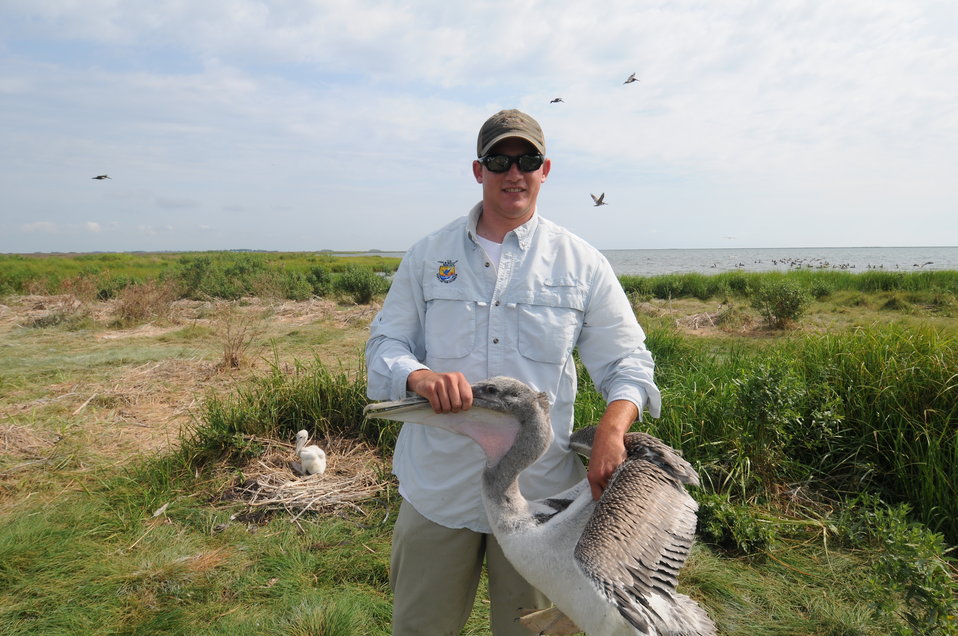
Biologist Robbie Callahan holds brown pelican for tagging.

Biologist Robbie Callahan captures a brown pelican for tagging on Smith Island in the Chesapeake Bay.